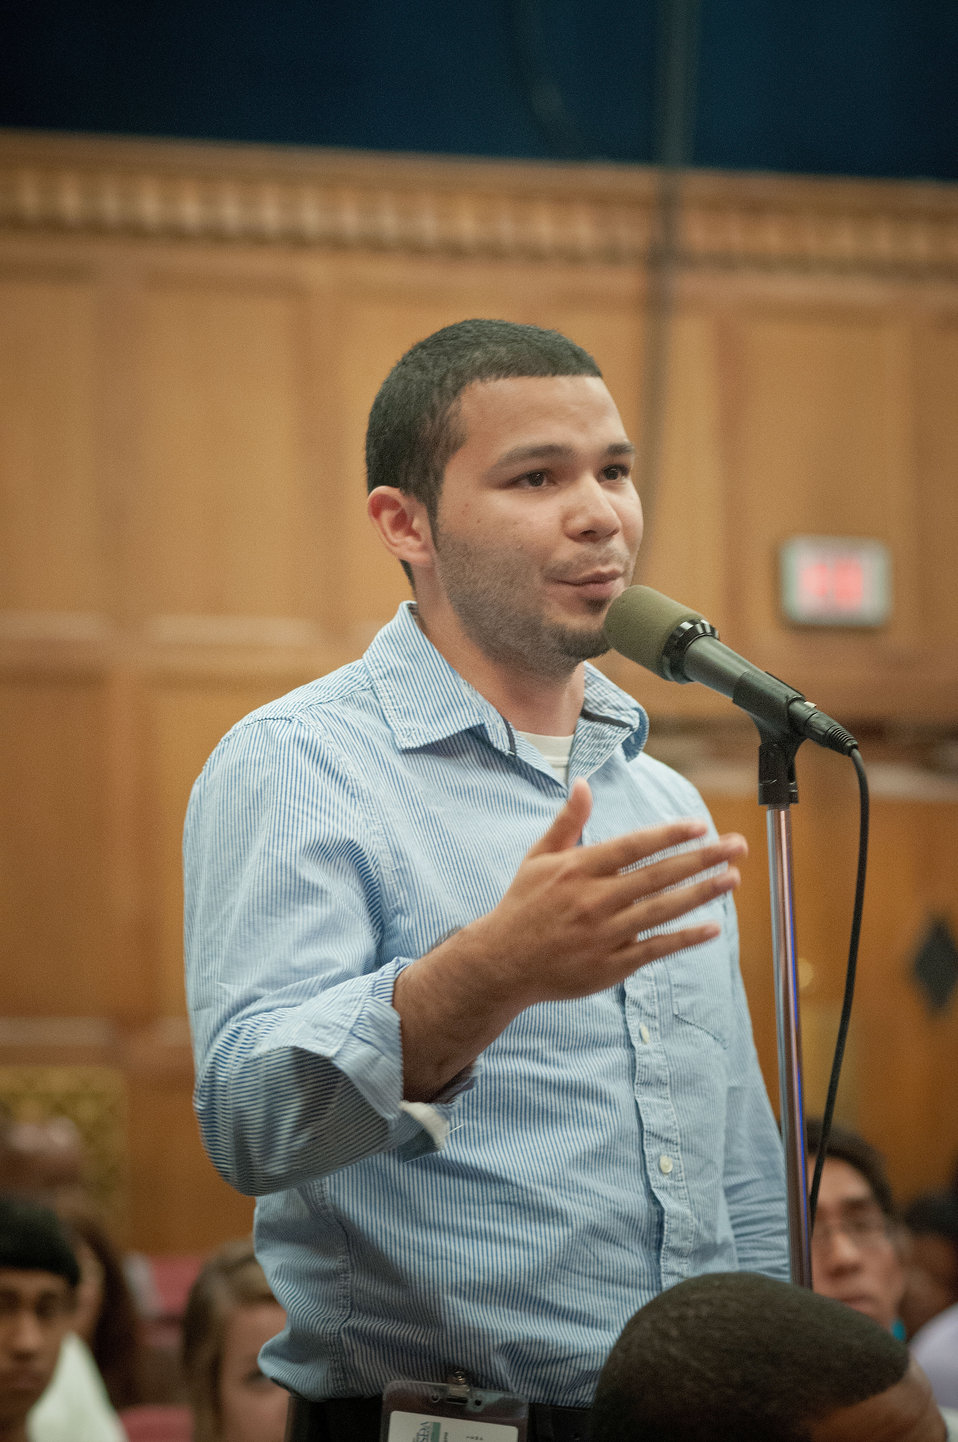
Cristian Pineda a George Mason University graduate and intern with the U.S. Forest Service was one of many audience members given an opportunity to ask questions of a panel of interns about their experience at the United States Department of Agriculture (USDA) during the USDA Intern Day and Panel Discussion, “Transforming USDA’S Tomorrow Today” in Washington, D.C., on Wednesday, July 11, 2012.